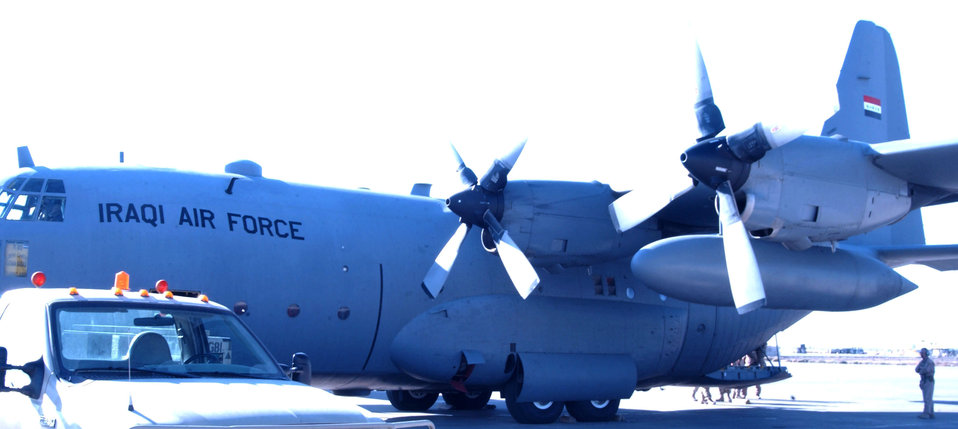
An Iraqi Air Force C-130 sits on the runway at Balad Air Base, Iraq, awaiting cargo to be loaded. The Iraqi Air Force recently moved its first coalition cargo within the area of responsibility.